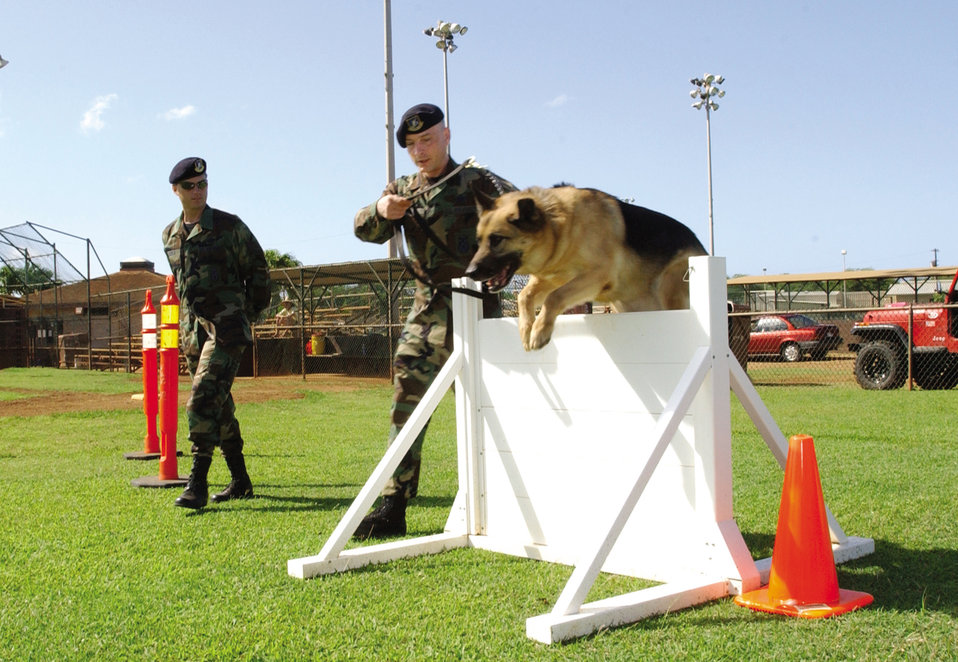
Ruff competition

HICKAM AIR FORCE BASE, Hawaii -- Staff Sgt. Ross Morgan and Iro, a military working dog, go through the obstacle course during the Pacific Air Forces Military Working Dog Competition here as Tech. Sgt. Gerald Harris observes. Sergeant Morgan and Iro are from Eielson Air Force Base, Alaska. Sergeant Harris is the kennel master here.